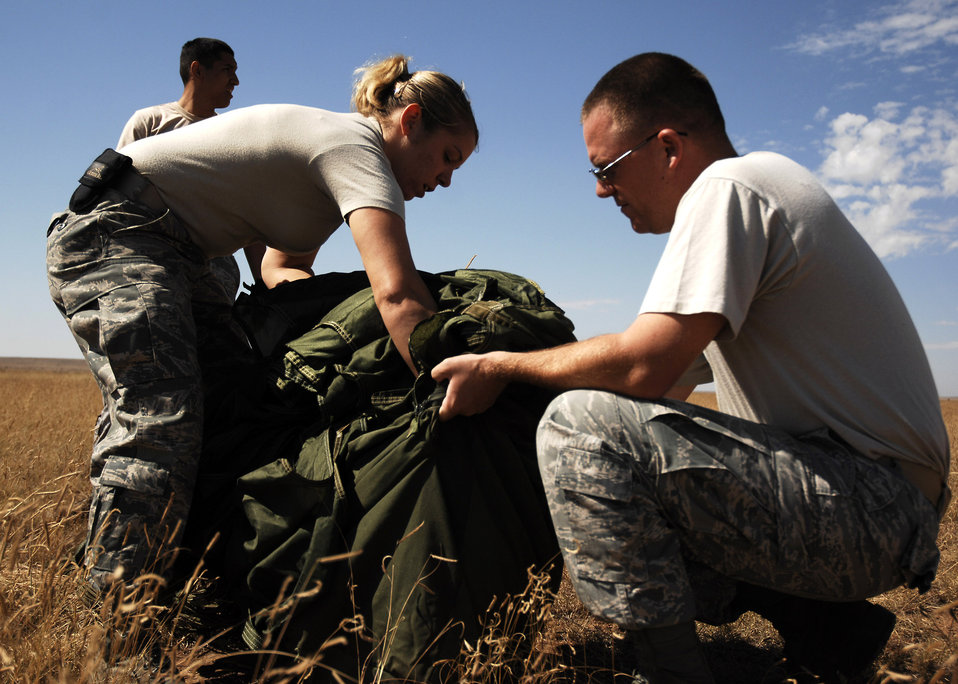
Cannon Airmen train for special operations forces resupply

Senior Airman Helen Eberly and Staff Sgt. Jerimy Pickering recover a parachute at the Melrose Air Force Range, N.M., during an exercise Sept. 23. Airmen pack, inspect, and recover the loads that are used for airdrop training. Airman Eberly and Sergeant Pickering are assigned to the 27th Special Operations Logistics Readiness Squadron.